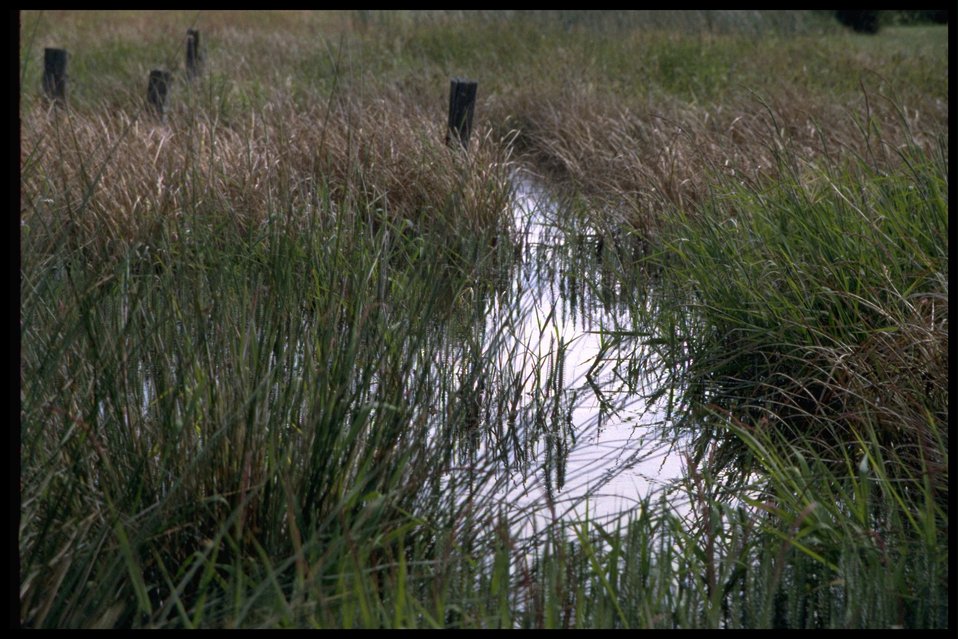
Chadwick Hill Marsh.